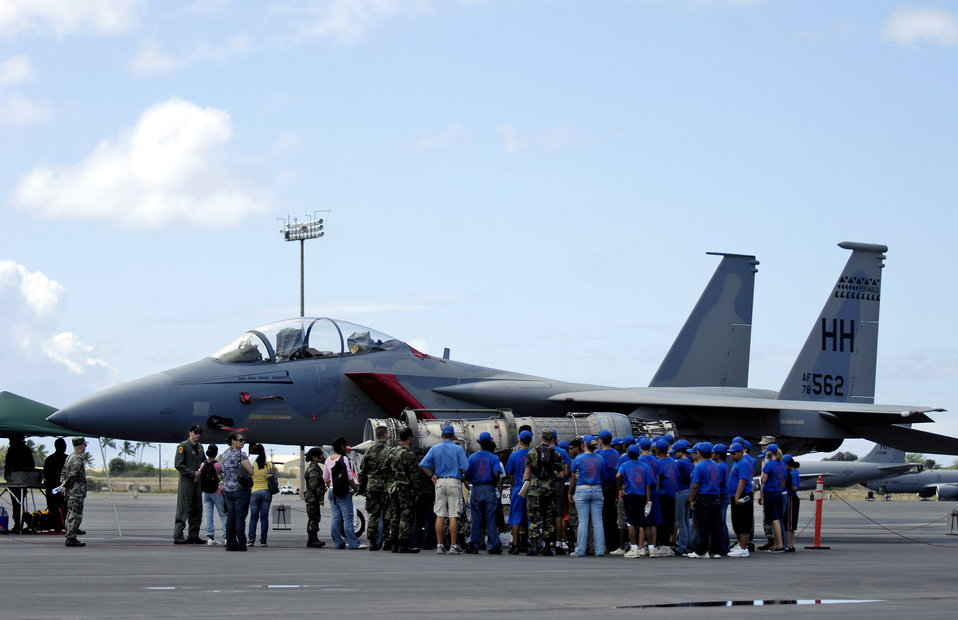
Hickam hosts Education Day

High school students are briefed on the F-15 Eagle Sept. 13 at Hickam Air Force Base, Hawaii, during Air Force Education Day. Members of 13th Air Force hosted the day for Hawaii public school math and science students as part of Air Force Week Honolulu.